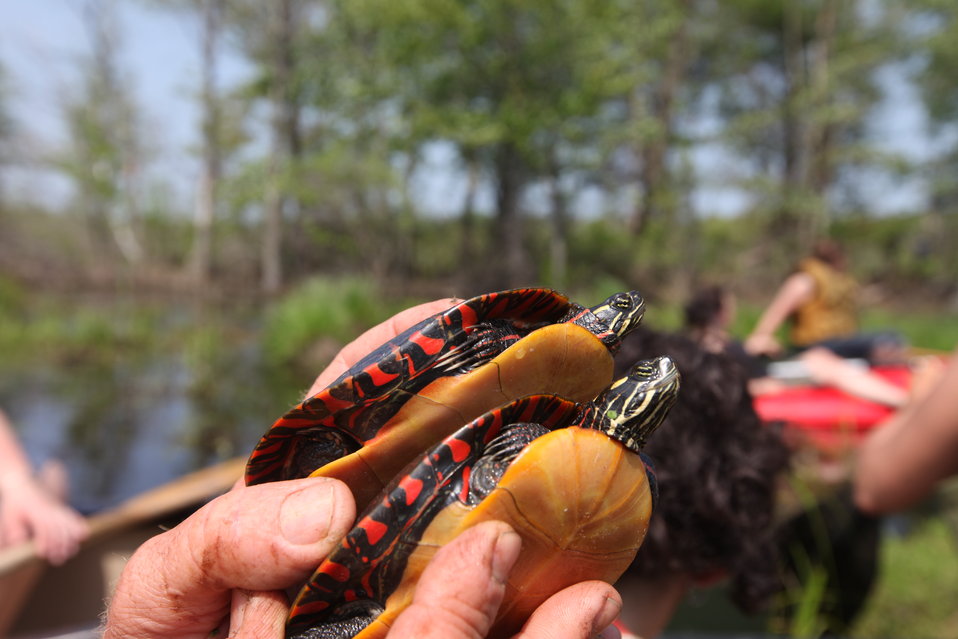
Two Painted Turtles

Blanding's turle release at Assabet River, MA.